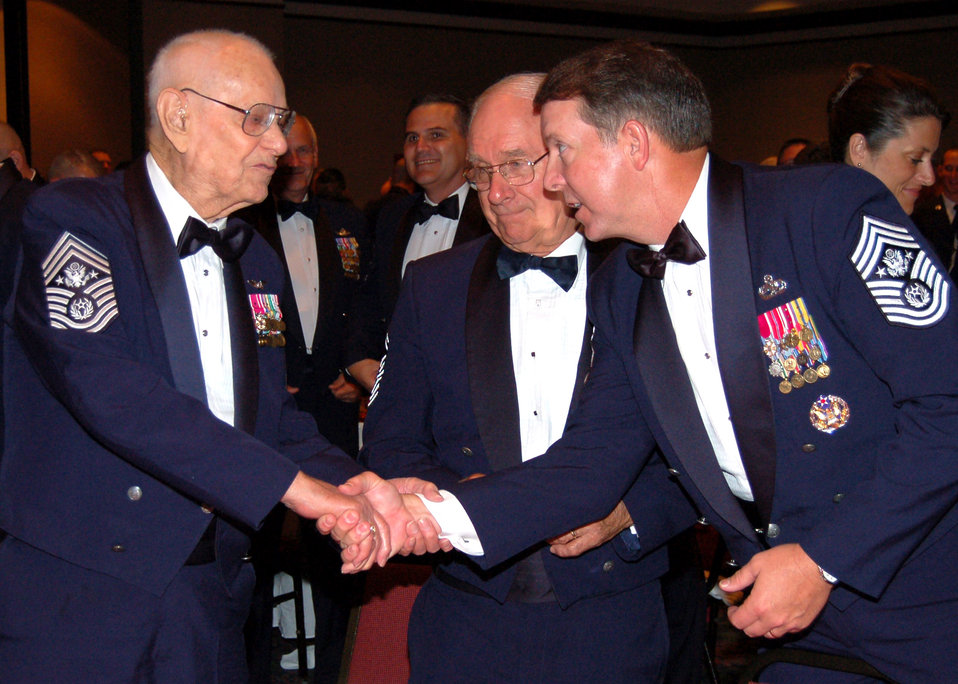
Airmen recognize impact of enlisted heritage

Chief Master Sgt. of the Air Force Rodney J. McKinley (right) shakes hands with Chief Master Sgt. of the Air Force Paul Wesley Airey at the Senior Enlisted Leaders Conference Heritage Dinner July 26 in Montgomery, Ala. Chief Airey was the first Airman to ever hold that position. The eighth Chief Master Sgt. of the Air Force Sam Parrish stands between them.